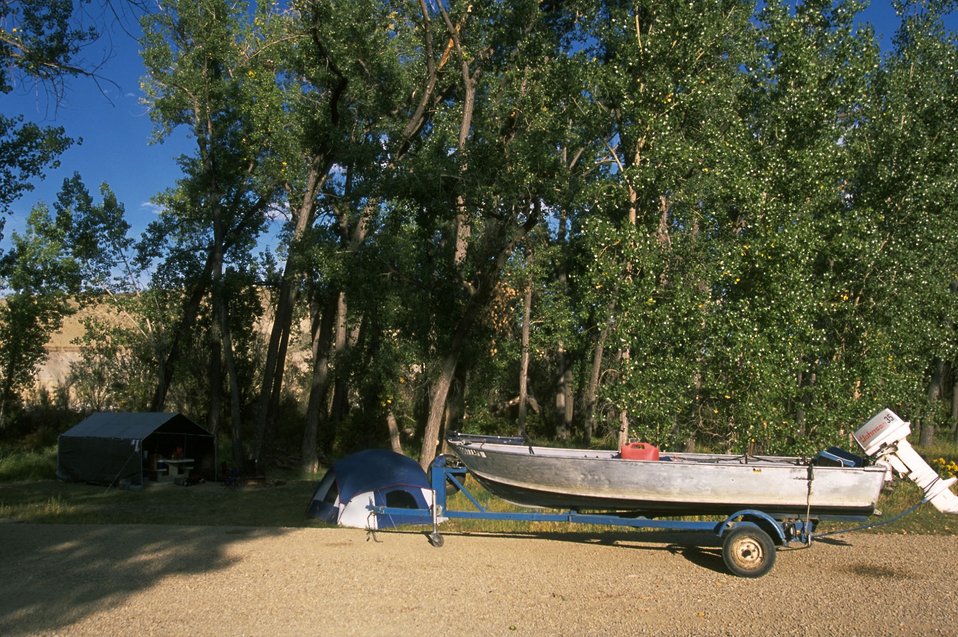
Camping at Kipp Recreation Area